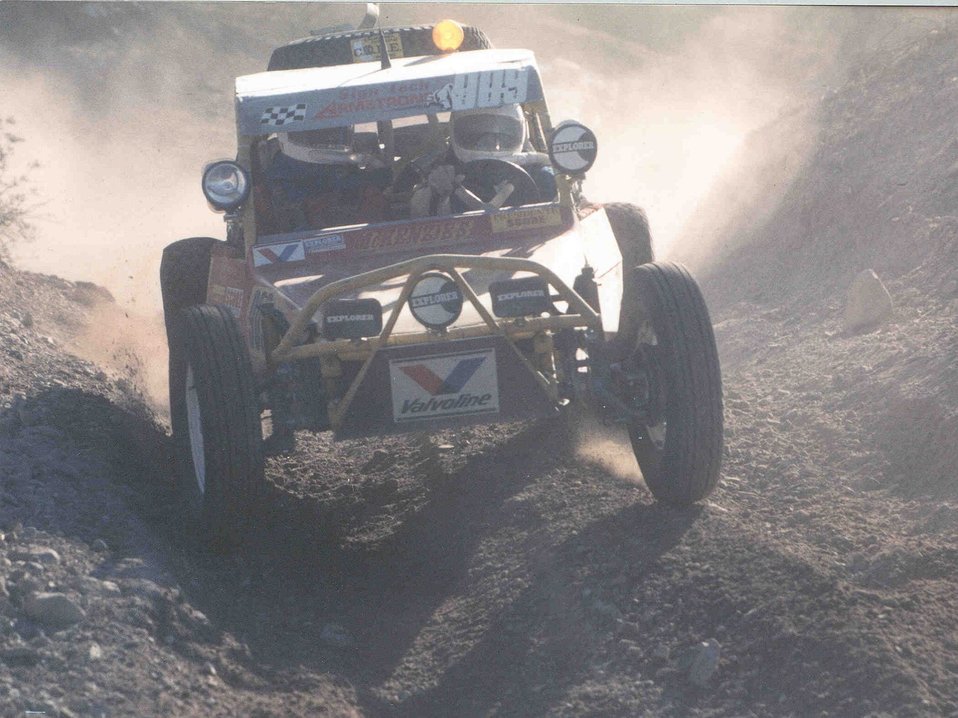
Off highway vehicle rail racing in the desert